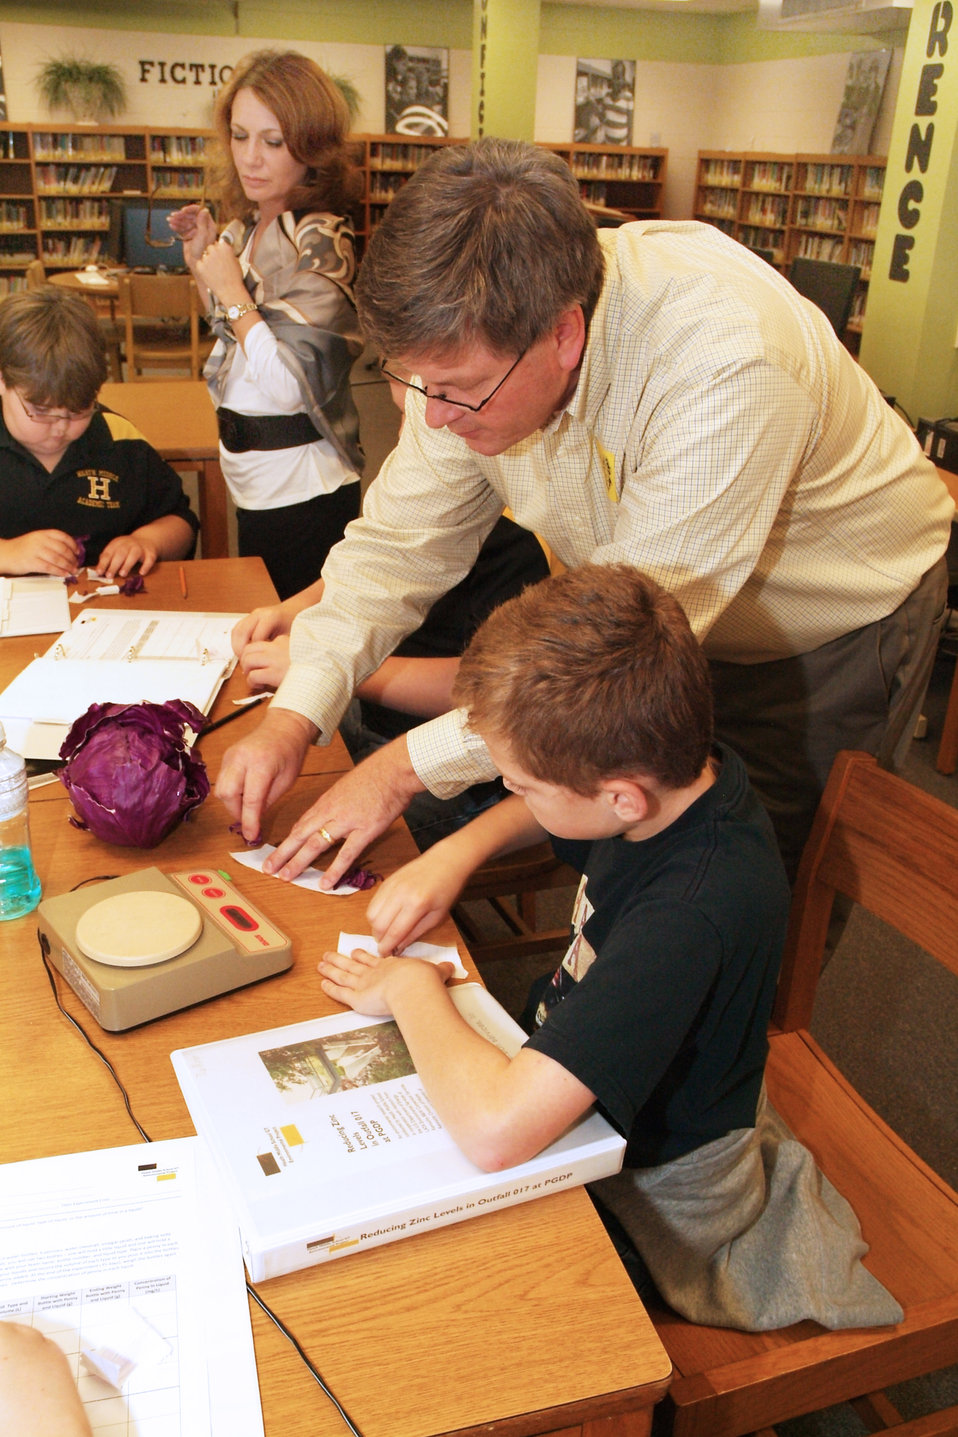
Heath Middle School Science Project Ongoing at Paducah Site

Mentor Jim Erickson of the LATA Kentucky team shows Heath Middle School sixth-grader Ian Morgan how to use red cabbage to indicate if a watery solution is acidic, basic, or neutral.

Twenty-six of Heath Middle School’s brightest science students spent the 2011-12 school year helping DOE try to resolve a real environmental issue at the Paducah site.

Mentors assigned to each grade — sixth, seventh, and eighth — taught students investigative techniques as the school year progressed. The students used data and information to produce a presentation with tables, graphs, and charts. Three groups of students, representing their respective grades, presented their findings and recommendations April 20, 2012.